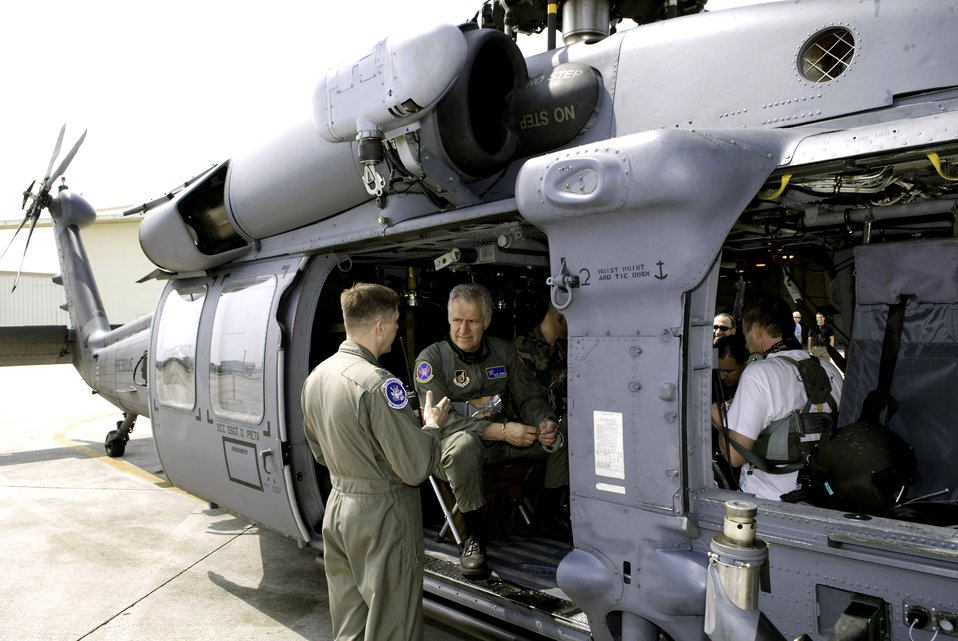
Kadena Airmen shine on 'Jeopardy!'